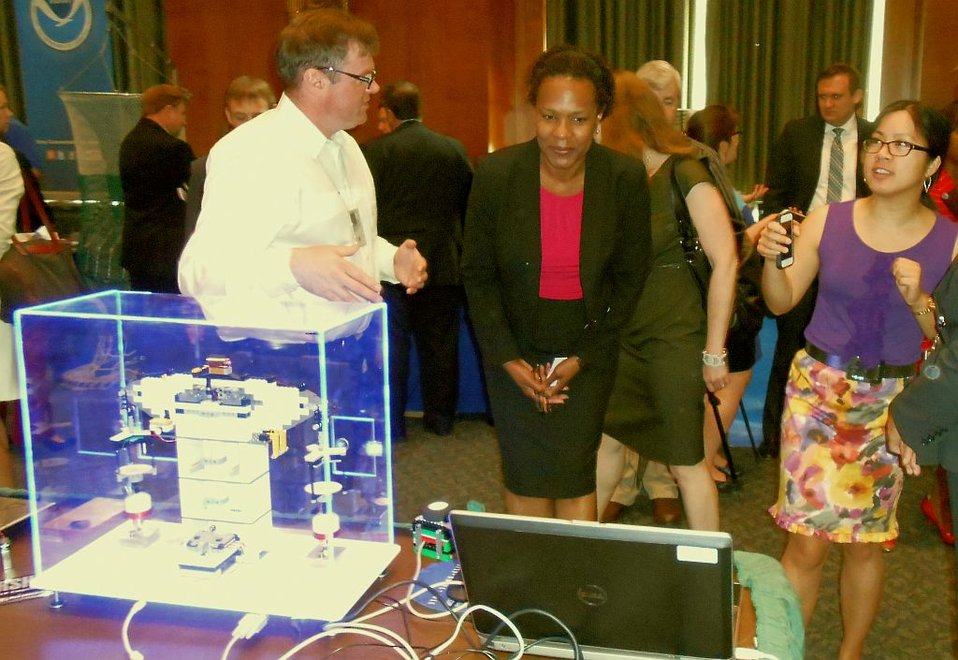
NIST physicist Dr. Stephen Schlamminger (left) describes a Lego model watt balance and NIST’s research in redefining the kilogram to congressional staffers as part of the Department of Commerce Day on the Hill event in the Dirksen Senate Office Building.